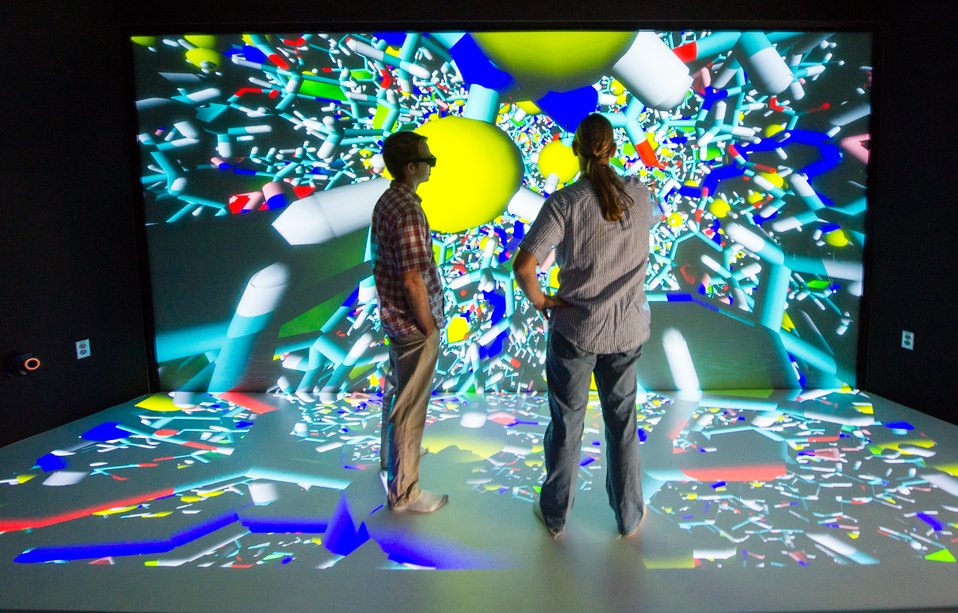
Visualization Lab, ESIF

June 18, 2013 - NREL Senior Scientists Ross Larsen and Travis Kemper examine a molecular model of Polymeric organic nitroxide radical (PTMA) film for battery applications using a 3D model at the Insight Collaboration Laboratory during a tour of the Energy Systems Integration Facility (ESIF) at the National Renewable Energy Laboratory (NREL) in Golden, Colorado.